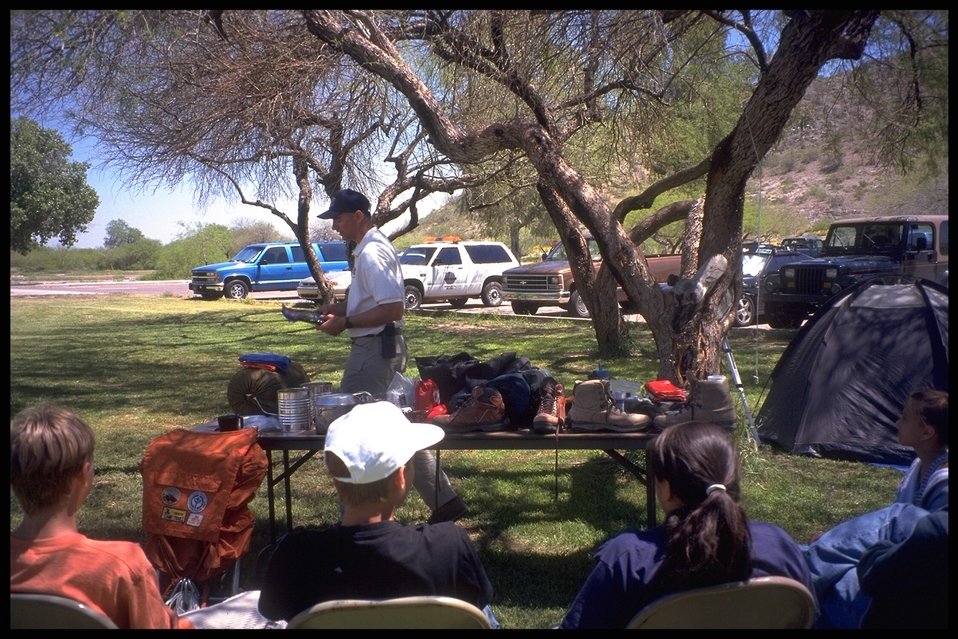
WOW, the Wonderful Outdoor World program, brings a taste of a real camping experience to urban youth.